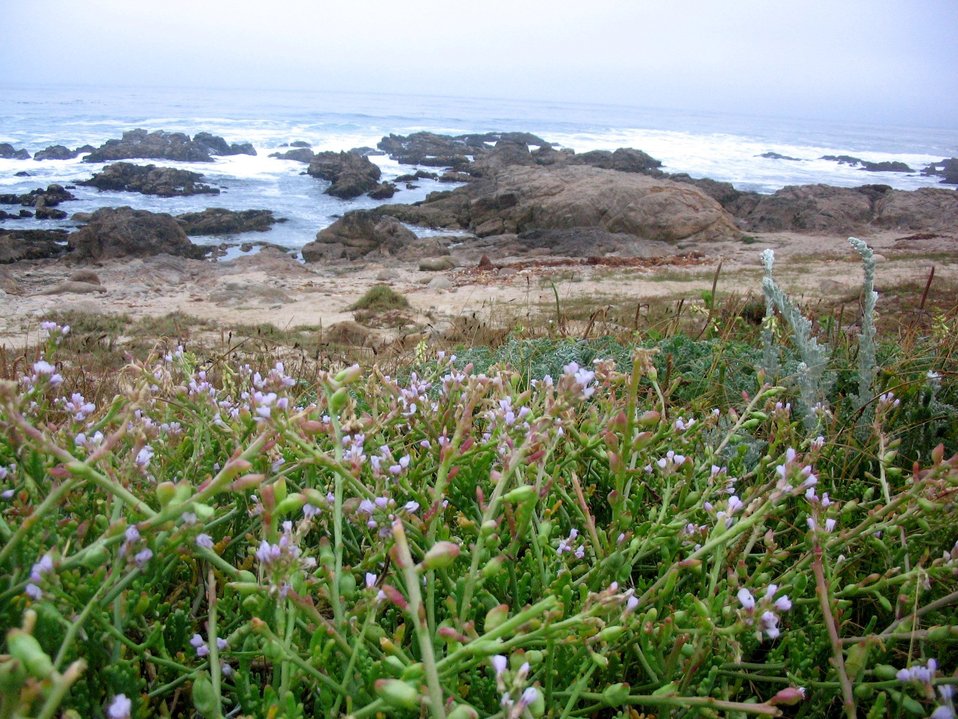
Unidentified lavendar flowers with rocky shore and ocean in the background.